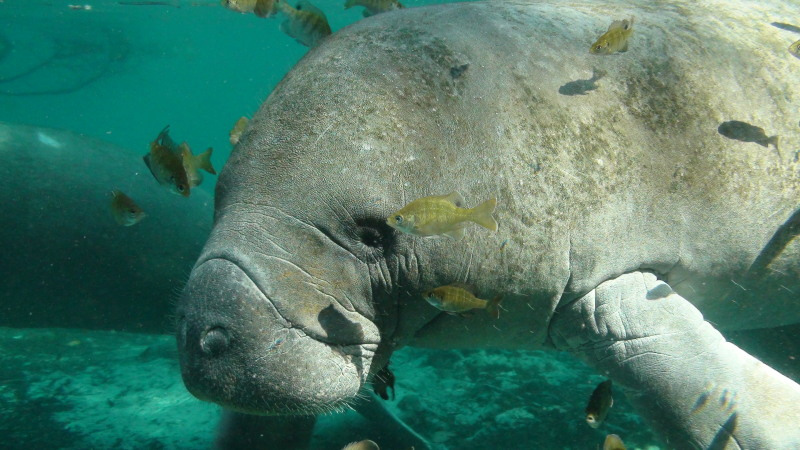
Endangered Florida manatee (Trichechus manatus)

Photo credit: Tracy Colson

The Crystal River National Wildlife Refuge, was established in 1983 specifically for the protection of the endangered West Indian Manatee. This unique refuge preserves the last unspoiled and undeveloped habitat in Kings Bay, which forms the headwaters of the Crystal River. The refuge preserves the warm water spring havens, which provide critical habitat for the manatee populations that migrate here each winter.